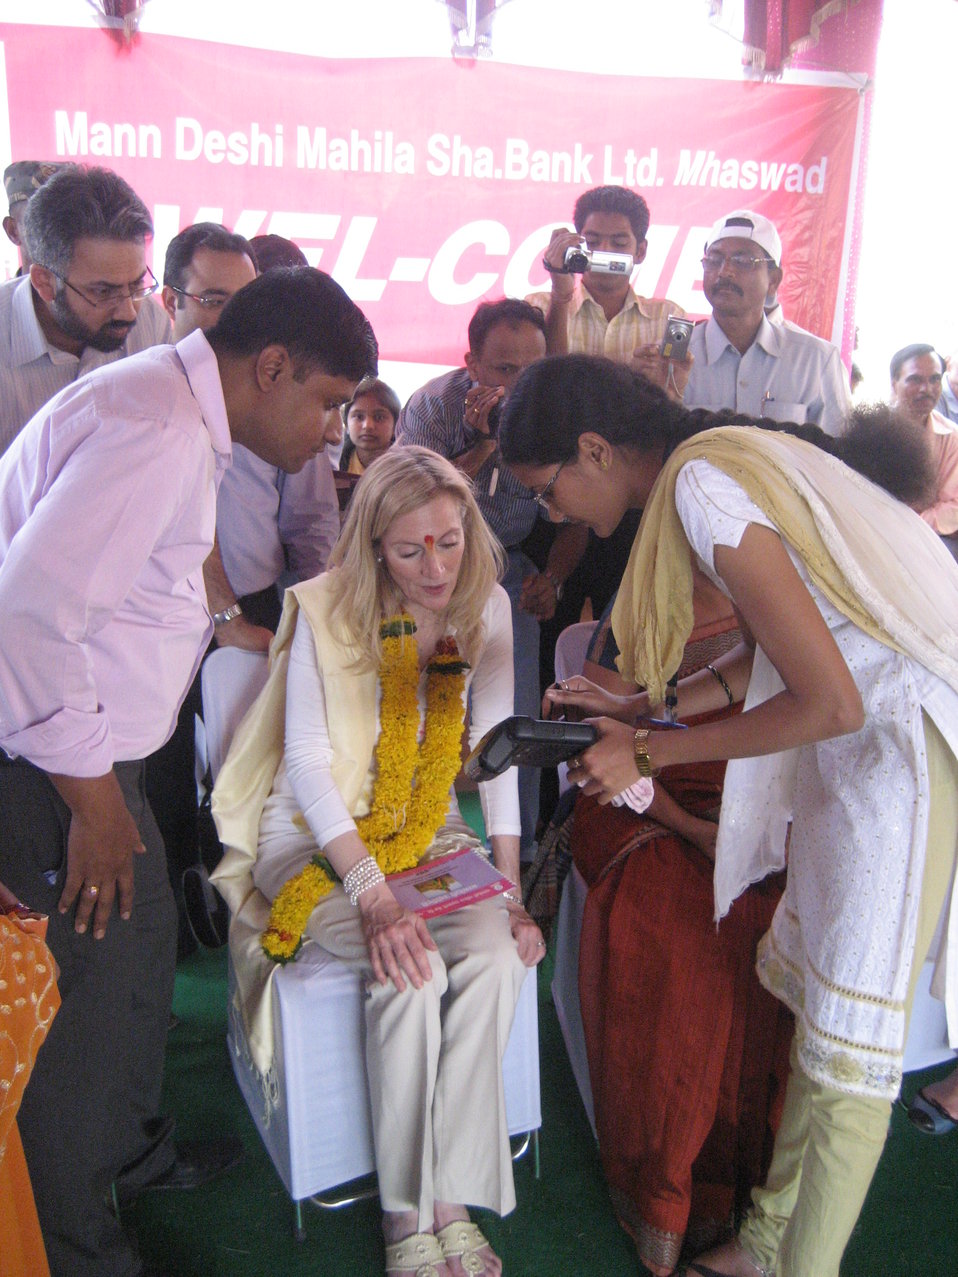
Lael Brainard's Visit to India

On Wednesday, March 2, outside the city of Pune in Maharashtra, India, Under Secretary Lael Brainard visited Mann Deshi Bank, a regulated cooperative bank run by and for women. Mann Deshi was India’s first rural financial institution to receive a cooperative license from the Reserve Bank of India.